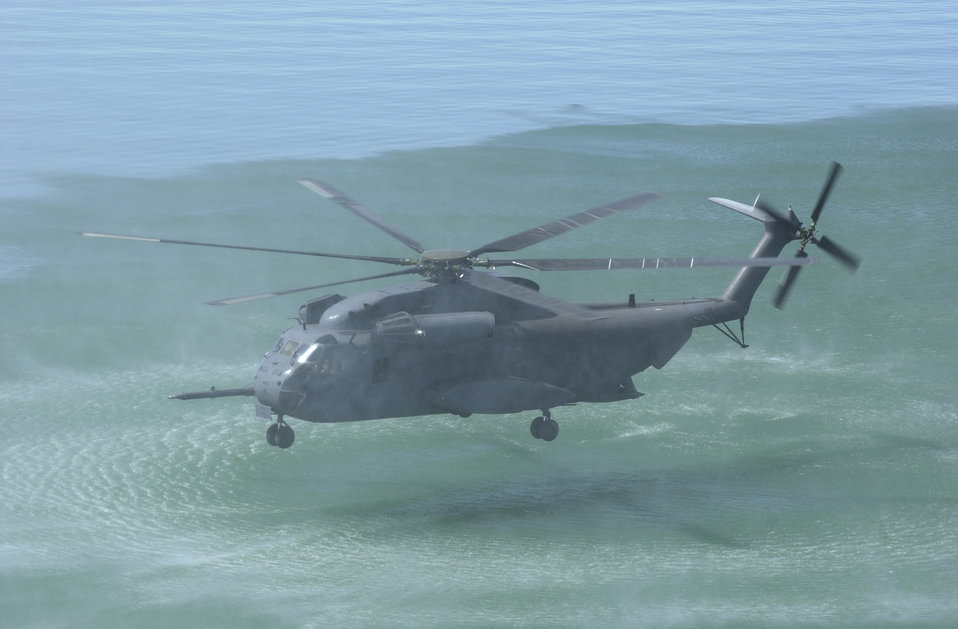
Training mission

KIRTLAND AIR FORCE BASE, N.M. -- A 58th Special Operations Wing TH-53A flies a training mission. The TH-53A is the first model of the H-53 helicopter students learn to fly before going to the more advanced MH-53J Pave Low IIIE.